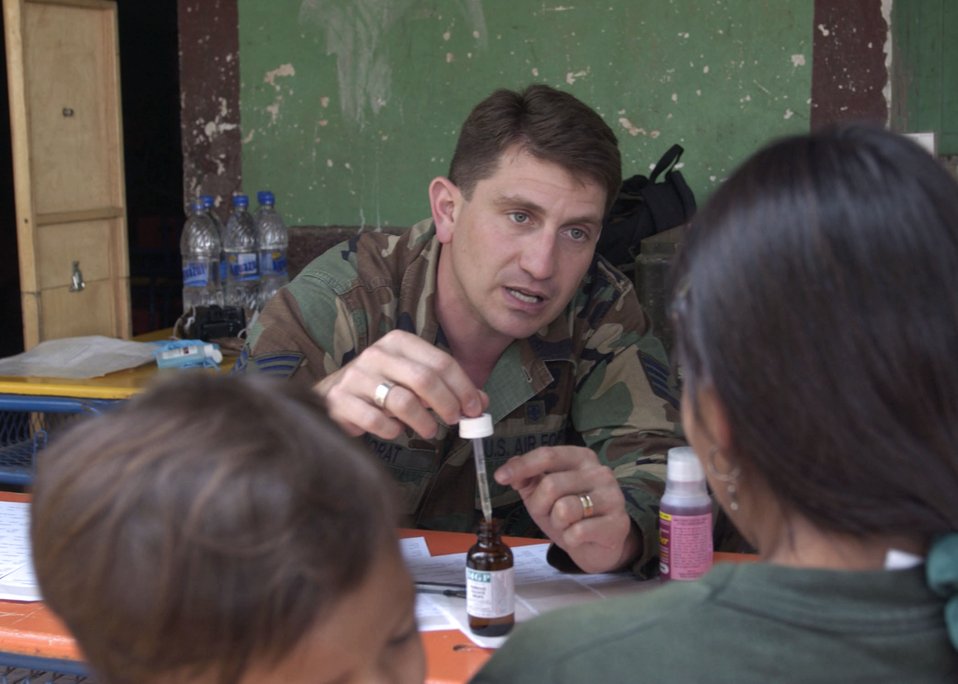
Medics provide human touch

RAUTECA, Honduras -- Staff Sgt. Sergio Norat instructs patients how to use an eyedropper to administer a dose of antibiotic. An 18-person Air Force and Army contingent of pediatricians, dieticians and medical technicians came from the San Antonio area for an eight-day medical readiness exercise to provide humanitarian relief. Sergeant Norat is a medical technician and international health specialist from Wilford Hall Medical Center at Lackland Air Force Base, Texas.